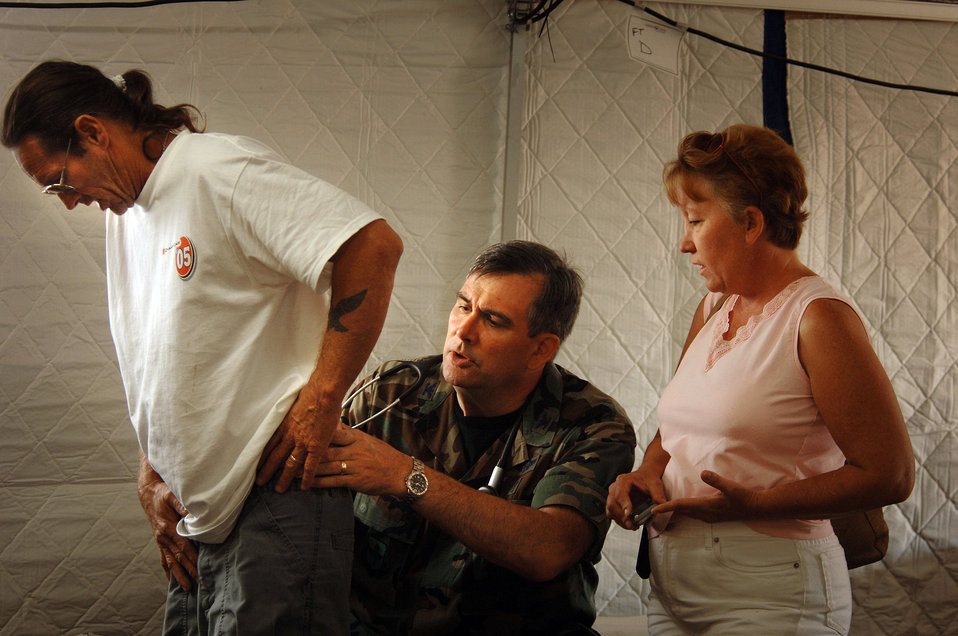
Keesler helping restore Gulf Coast medical infrastructure

GULFPORT, Miss. -- Col. (Dr.) Tony Van Goor treats the back of Robert Watters hoping to isolate the source of his pain at a treatment facility set up outside the Garden Park Medical Center hospital here. Dr. Van Goor and other medical providers with the 81st Medical Group from nearby Keesler Air Force Base are working with the Federal Emergency Management Agency to provide medical care to victims of Hurricane Katrina.